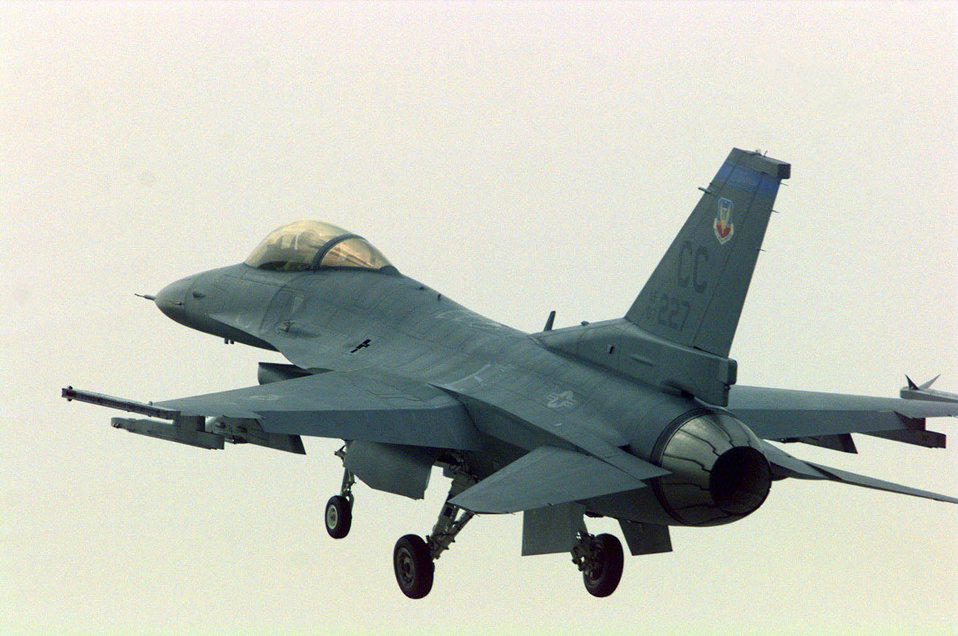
Crusaders

OPERATION SOUTHERN WATCH -- An F-16 Fighting Falcon belonging to the Crusaders of the 523rd Fighter Squadron, 27th Fighter Wing, Cannon Air Force Base, N.M., launches for a combat air patrol mission at a deployed location in Southwest Asia. The 523rd is enforcing the No-Fly, No-Drive zone in Southern Iraq during Operation Southern Watch.